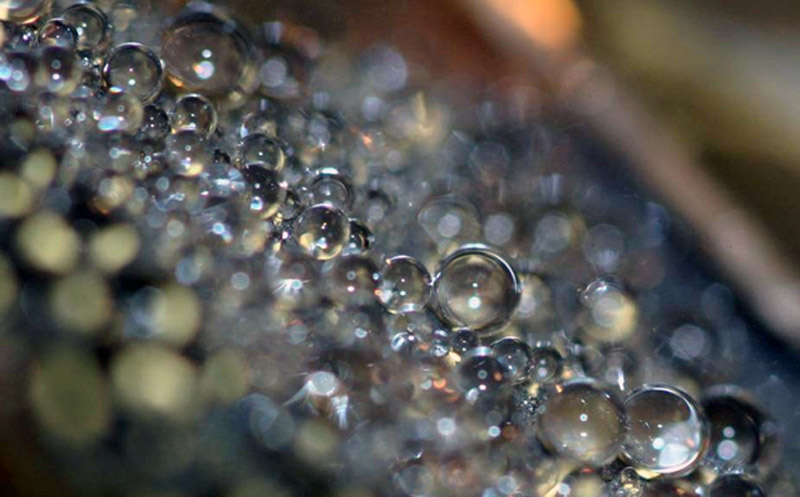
Transparent coating repels water, could reduce corrosion

This image shows how a transparent coating causes water to bead up into drops and roll or bounce off a surface. This new technology will help protect and sustain Air Force systems by preventing corrosion and reducing ice formation on optical elements and aircraft.